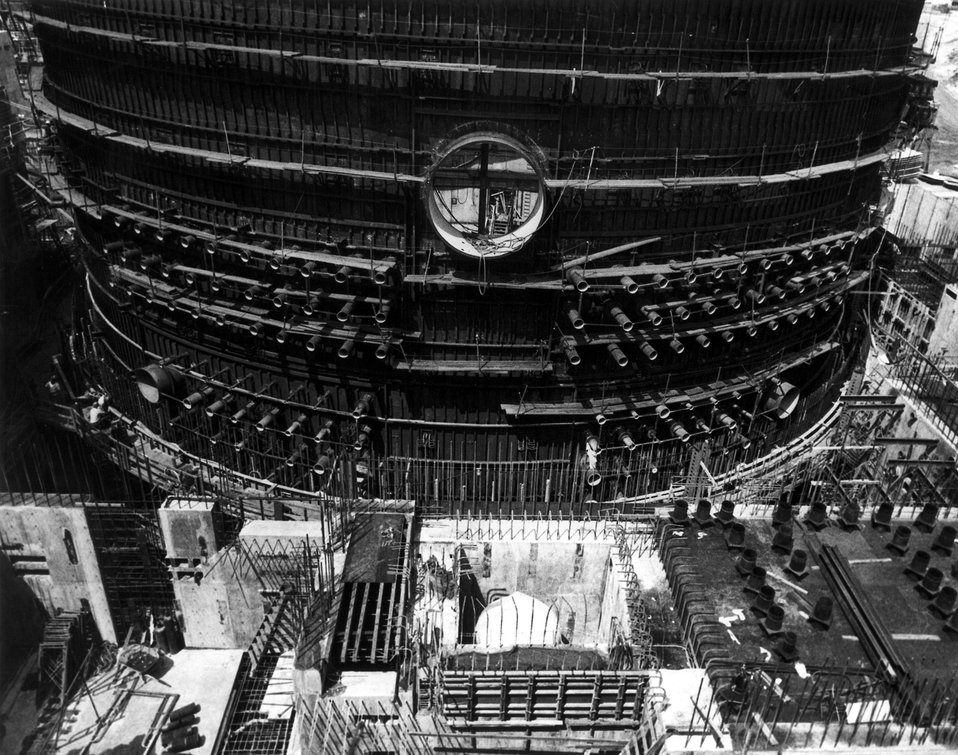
A view during construction of the reactor containment shell to house a 829,000 Kw(e) pressurized water reactor at the Joseph M. Farley Power Plant Unit 2.